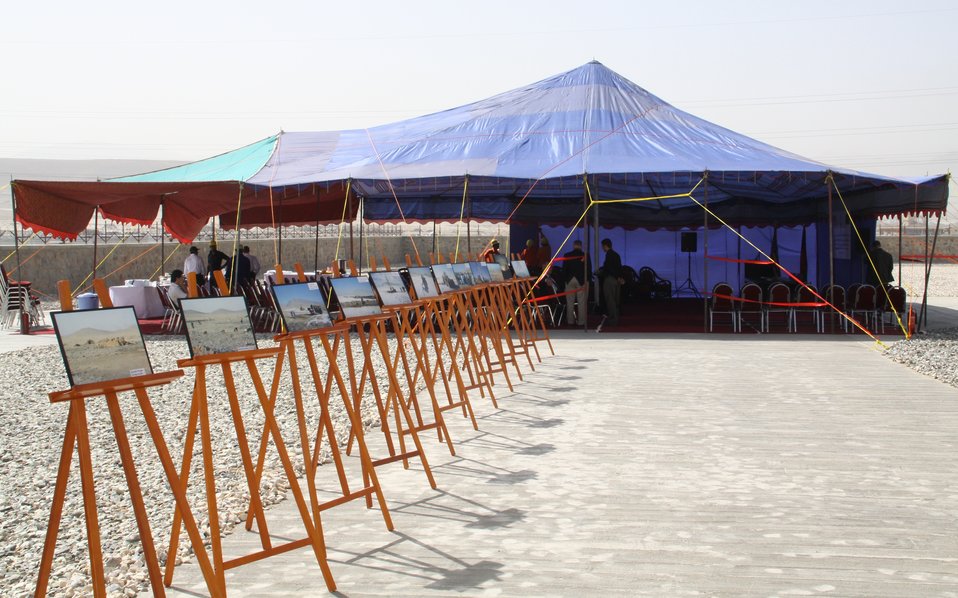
105 MW Tarakhil Power Plant Handover